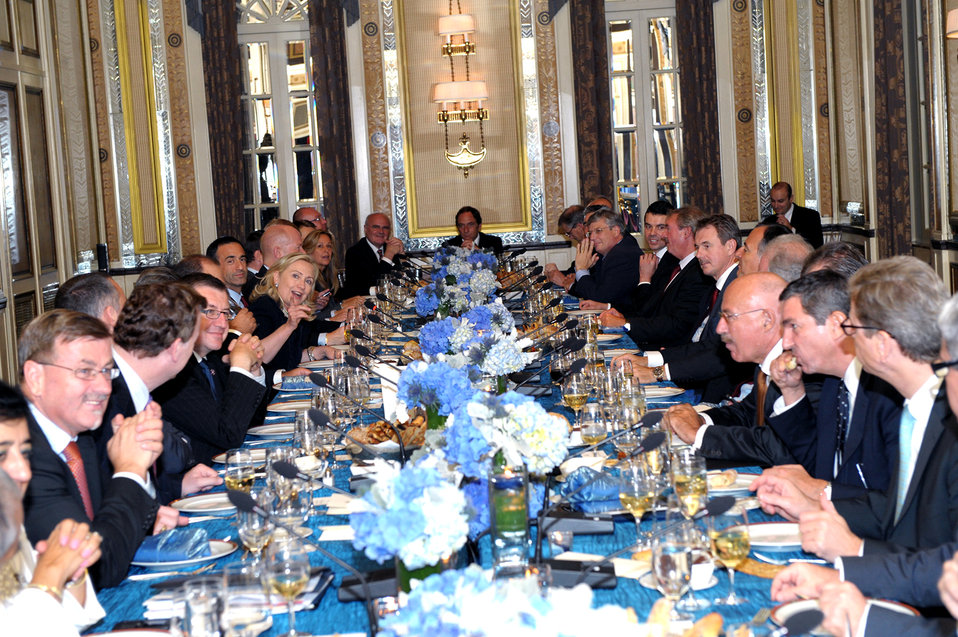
Secretary Clinton Hosts a Trans-Atlantic Dinner for Foreign Ministers From EU and NATO Countries

U.S. Secretary of State Hillary Rodham Clinton hosts a Trans-Atlantic Dinner for Foreign Ministers from EU and NATO countries, at the Waldorf-Astoria in New York, New York, on September 22, 2011.